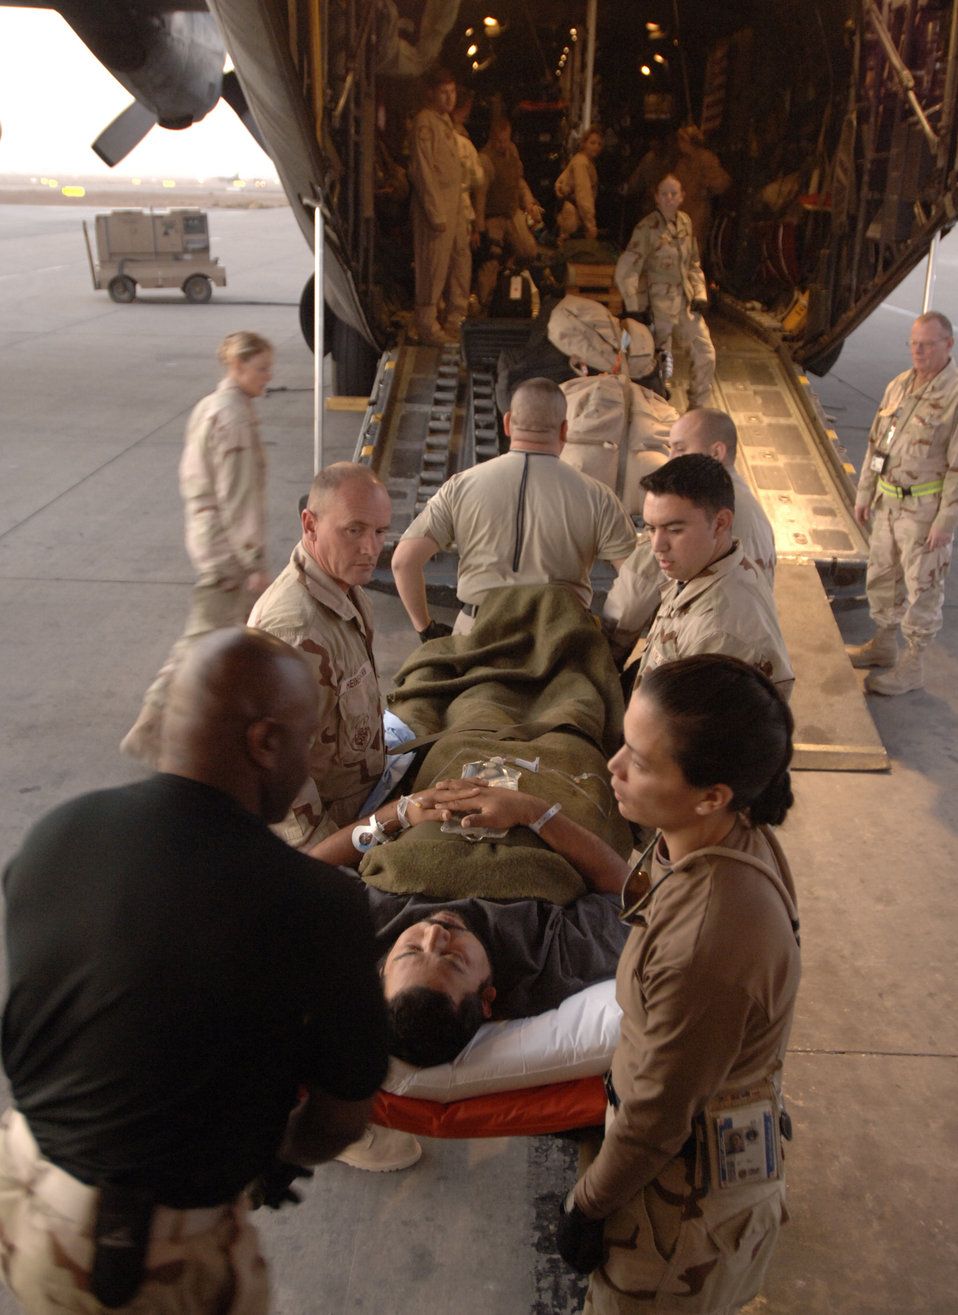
Aeromedical evacuation

Medics carry a U.S. civilian contractor onto a C-130 Hercules from the 332nd Contingency Aeromedical Staging Facility Nov. 22 during a temporary stop at Balad Air Base in Iraq.